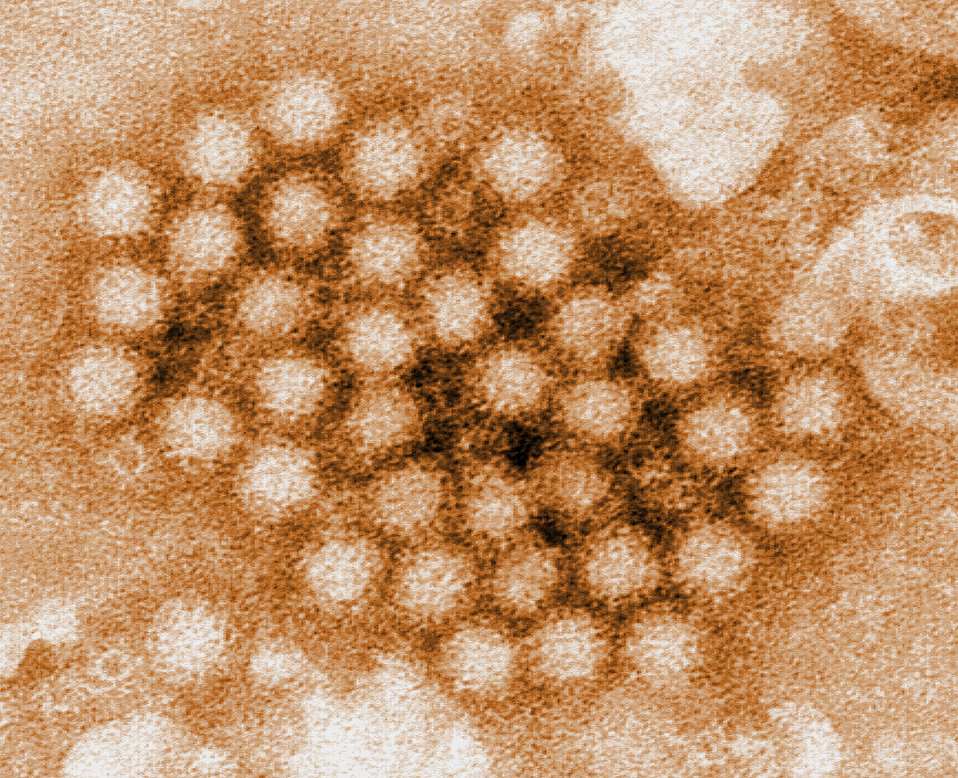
This transmission electron micrograph (TEM) revealed some of the ultrastructural morphology displayed by norovirus virions, or virus particles.How serious is norovirus disease?